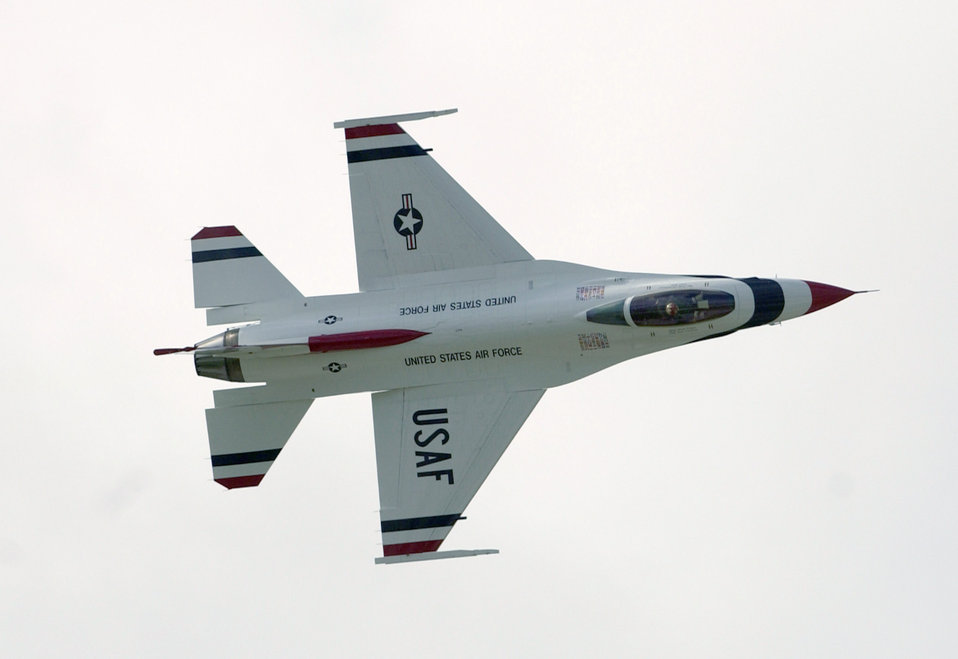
Thunderbirds

ANDERSEN AIR FORCE BASE, Guam -- The United States Air Force Demonstration Team